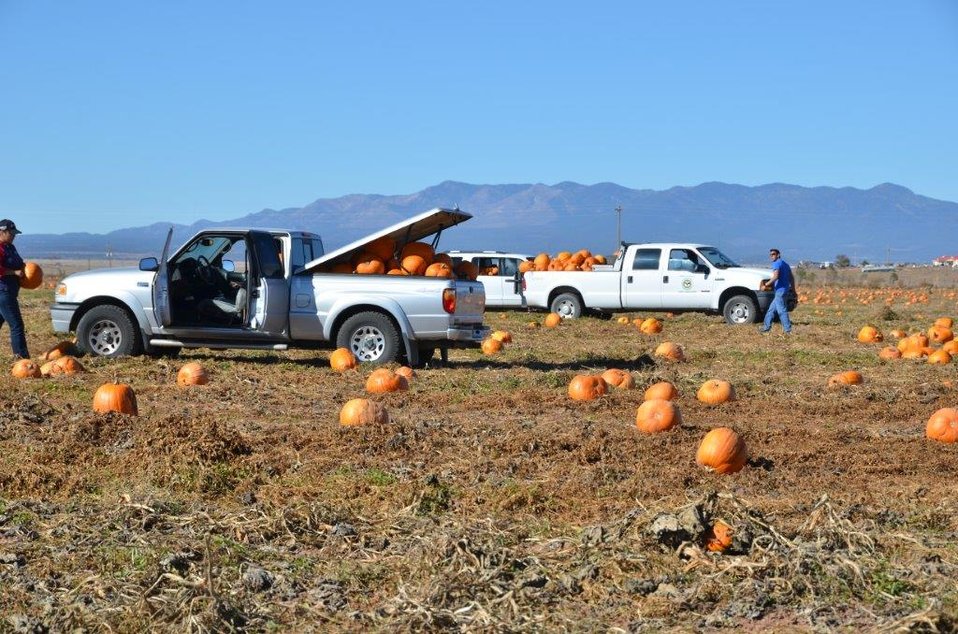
Pumpkin Gleaning 1

200 volunteers from local Native American organizations, Isleta, Santa Clara, Zuni, San Ildifanzo, Northern Jickarilla and Santo Domingo Pueblos, several youth organizations, students from the University of New Mexico and U.S. Department of Agriculture (USDA) Farm Service Agency (FSA) Forest Service (FS), Natural Resources Conservation Service (NRCS) and Rural Development (RD) employees glean leftover pumpkins from the farm of John and Dianne Aday to give to needy children. Students in the Torrance and Albuquerque County schools had smiles on their faces as trucks pulled up and delivered pumpkins to the students. The pumpkins also made their way to pediatric units at local hospitals, the St. Felix Pantry, a local food bank and youth centers in six counties around New Mexico. University of New Mexico students carved and decorated the pumpkins and delivered them to sick children.